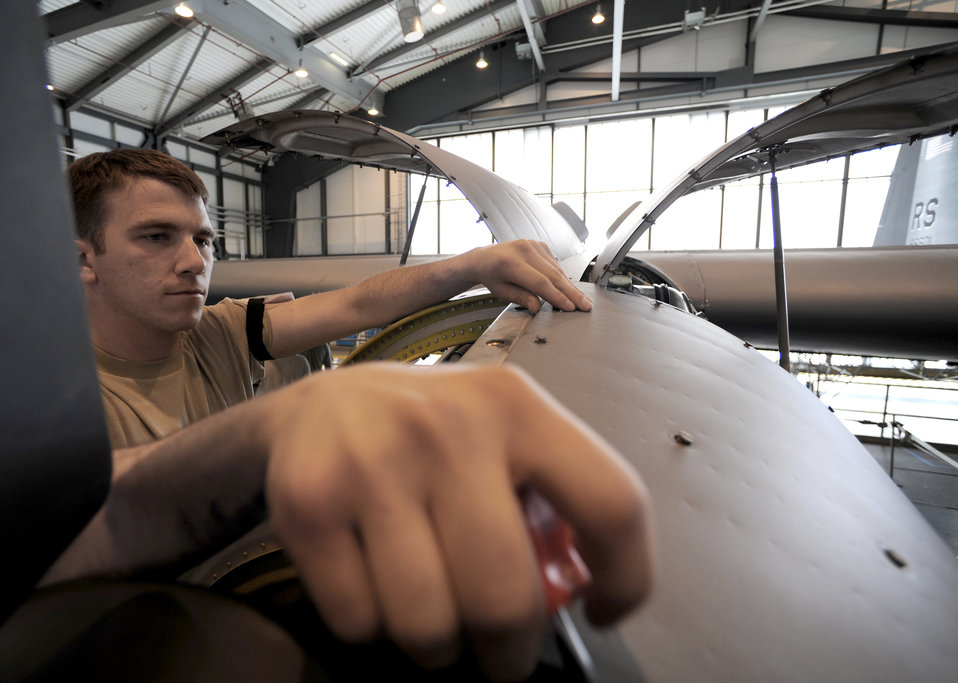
1st Isochronal Inspection

Staff Sgt. Joshua Coe depanels a turboprop on a C-130J Super Hercules during an isochronal inspection May 26, 2010, at Ramstein Air Base, Germany. This is the first C-130J all active-duty isochronal inspection done in the Air Force. Sergeant Coe is an 86th Maintenance Squadron isochronal engine maintainer.